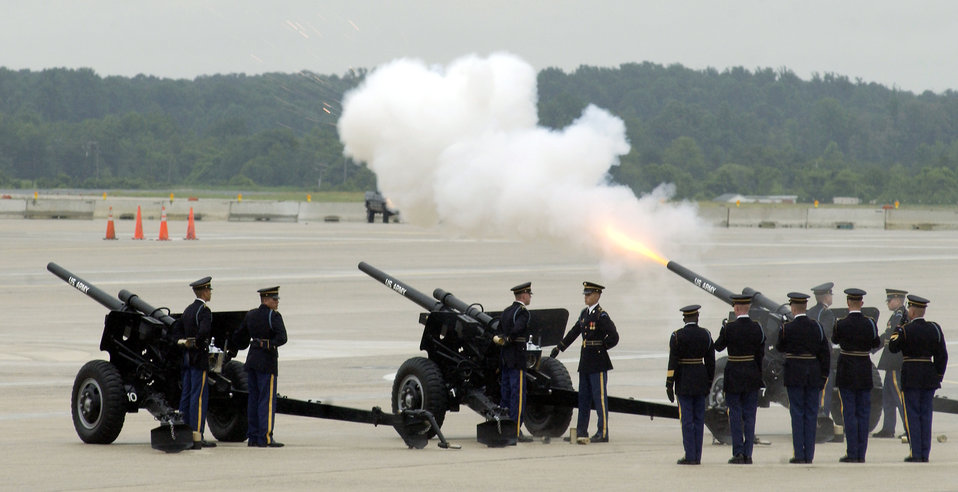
Farewell Mr. President

ANDREWS AIR FORCE BASE, Md. -- Members of The Old Guard's 3rd U.S. Infantry Salute Guns Platoon fire a 21-gun salute on the flightline here following the arrival of a hearse carrying former President Ronald Reagan's casket after his state funeral service at the National Cathedral in Washington on June 11. President Reagan was flown to the nation's Capitol on June 9 following his death June 5. President Reagan's remains were flown to Simi Valley, Calif., for a private sunset burial.